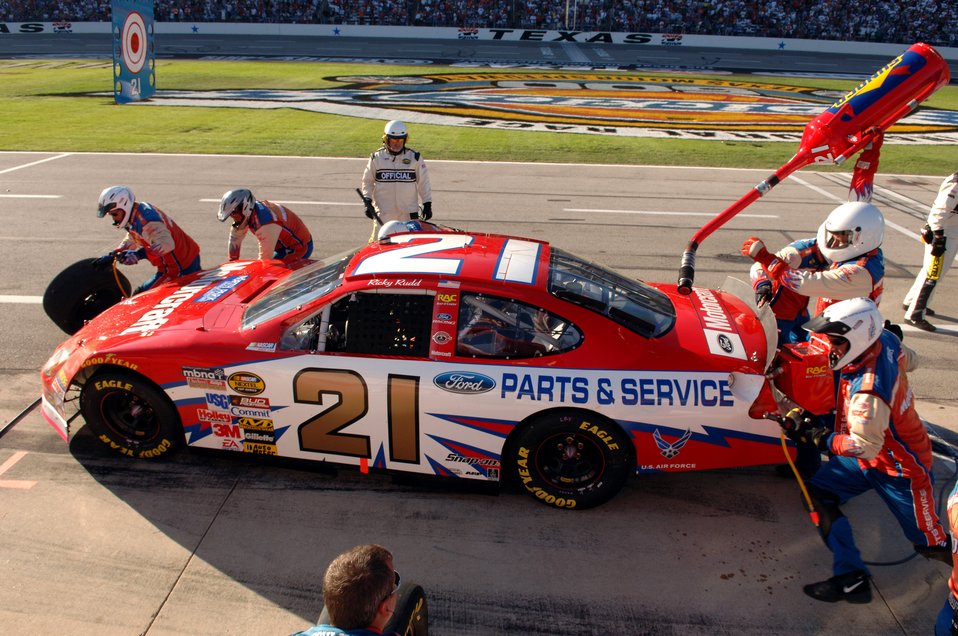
Raceway rumble

TEXAS MOTOR SPEEDWAY, Texas (AFPN) -- The NASCAR Nextel Cup Series Air Force co-sponsored car, number 21, makes a pit stop during the inaugural running of the Dickies 500. Ricky Rudd the car's driver finished in 13th place. This is the fifth straight year of the Air Force sponsorship of NASCAR.